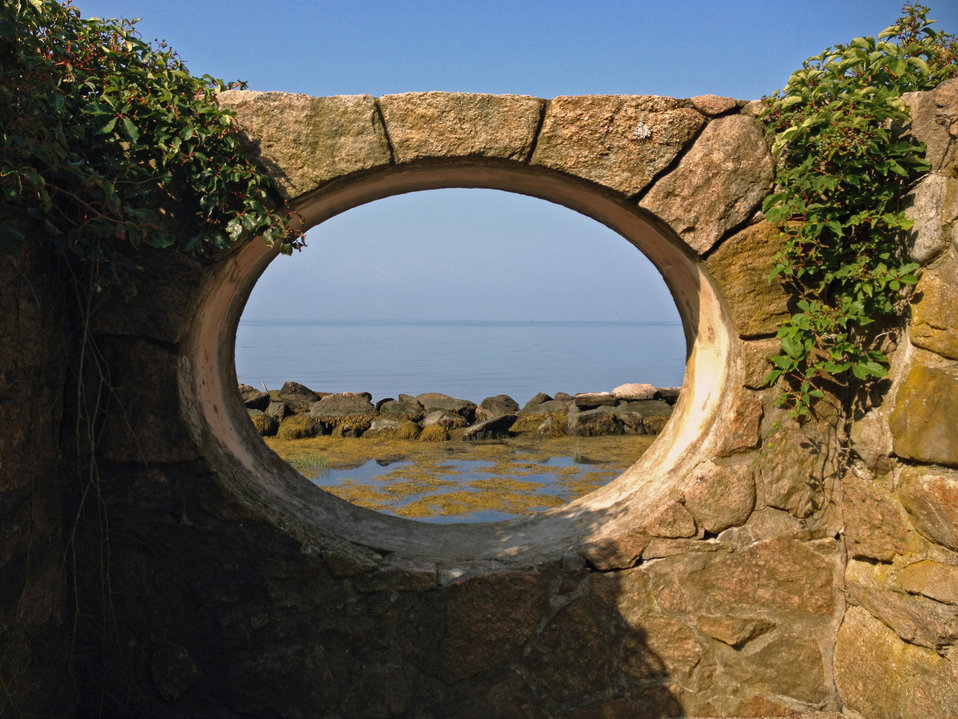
Moon Garden at Outer Island

Stewart B. McKinney National Wildlife Refuge, CT.